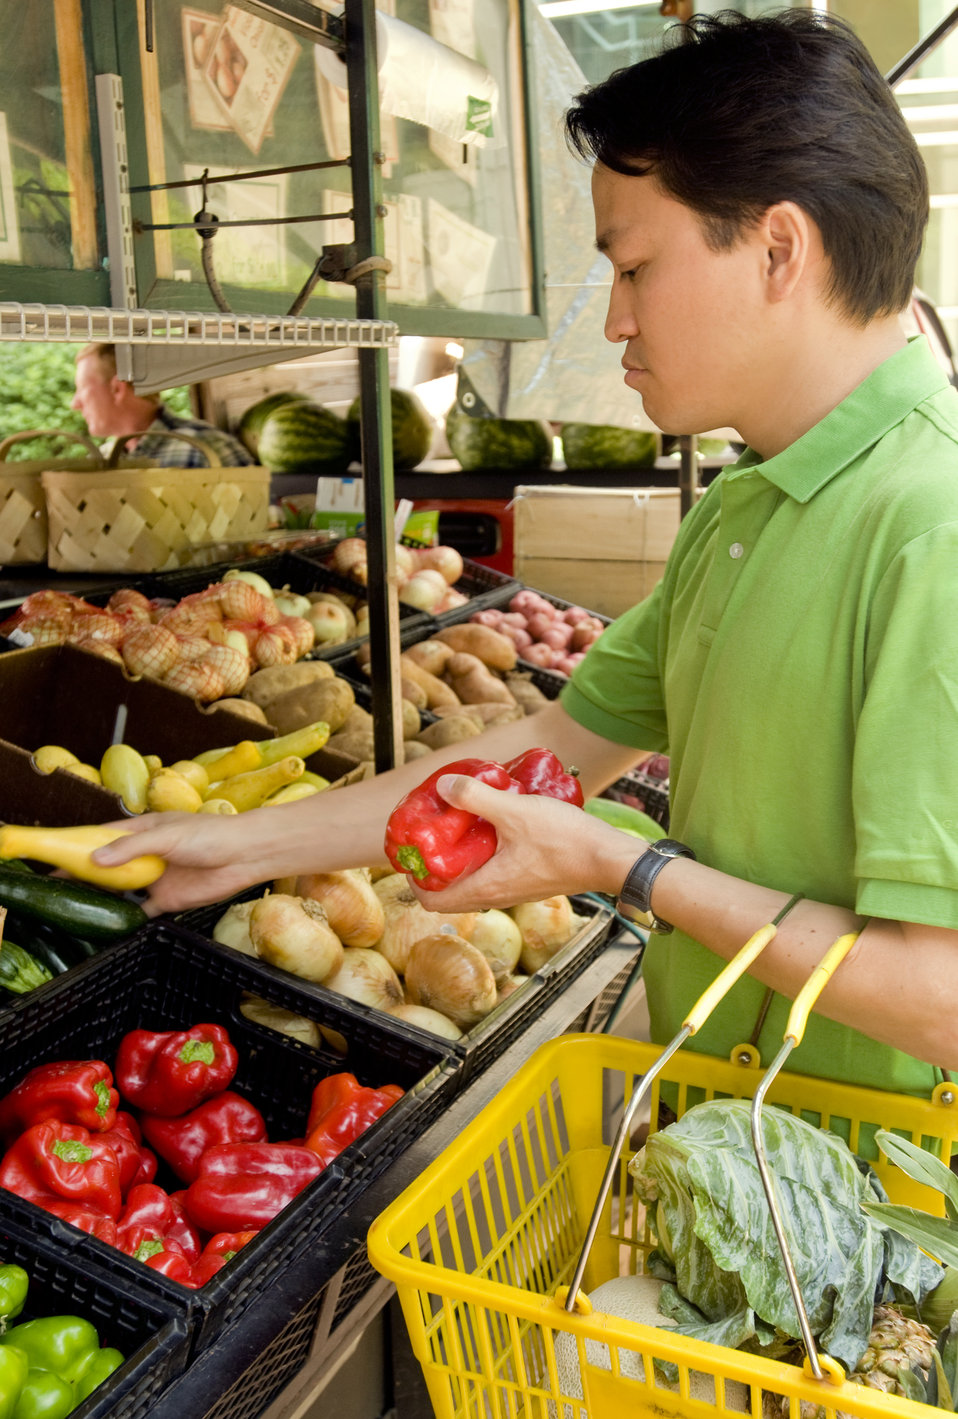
This photograph depicts a man shopping at a mobile produce market, making healthy food choices from an array of fresh fruits and vegetables. After having made his choices, he had placed his selections into a yellow plastic basket, which he carried by its handles hooked over his left forearm. In this particular view, he was inspecting a bright red bell pepper he held in his left hand, while in his right hand he was picking up a yellow squash.